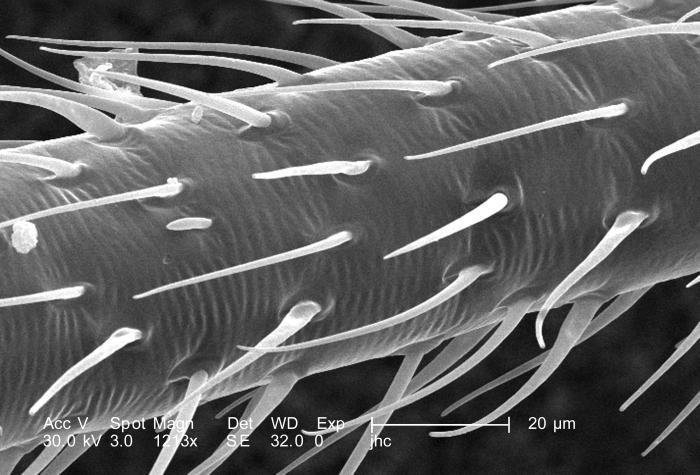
Under a magnification of 1213X, this scanning electron micrograph (SEM) revealed some of the morphologic features located upon the surface of one of the two antennae used by an unidentified 1/4"-sized black flying insect with a small red mark on its dorsum, in order to detect changes in the organism's environment such a wind speed and direction, chemical queues, i.e., pheromones, and variations in temperature. The antenna is composed of three main regions: scape, pedicle, and flagellum. The scape attaches the sensory organ to the head region, while the pedicle joins the distal, jointed flagellum to the scape.